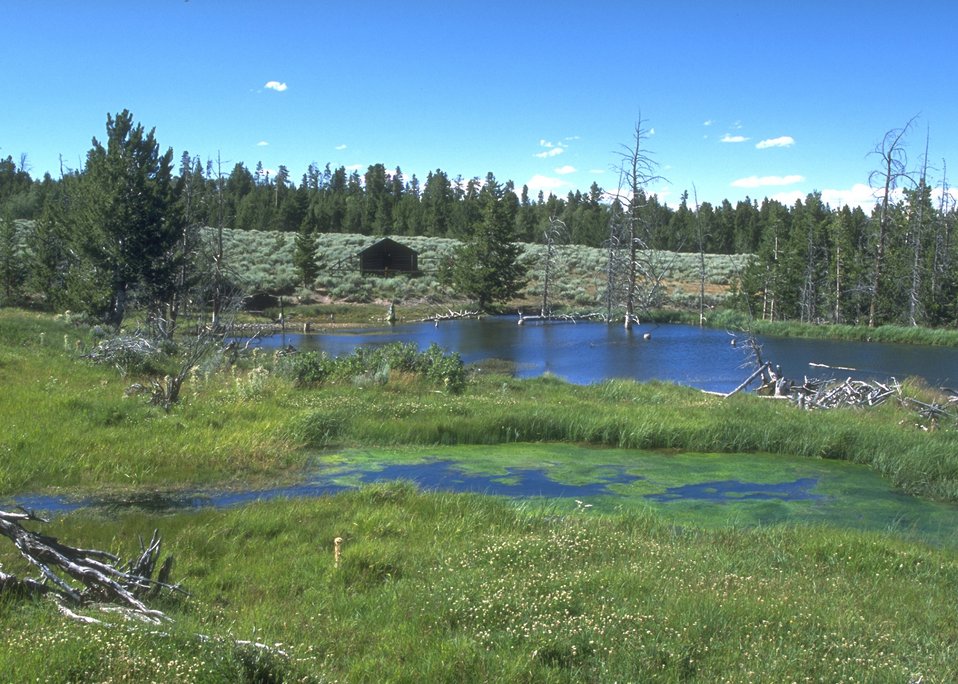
Beaver pond and structure at Miners Delight, Lander Field Office.